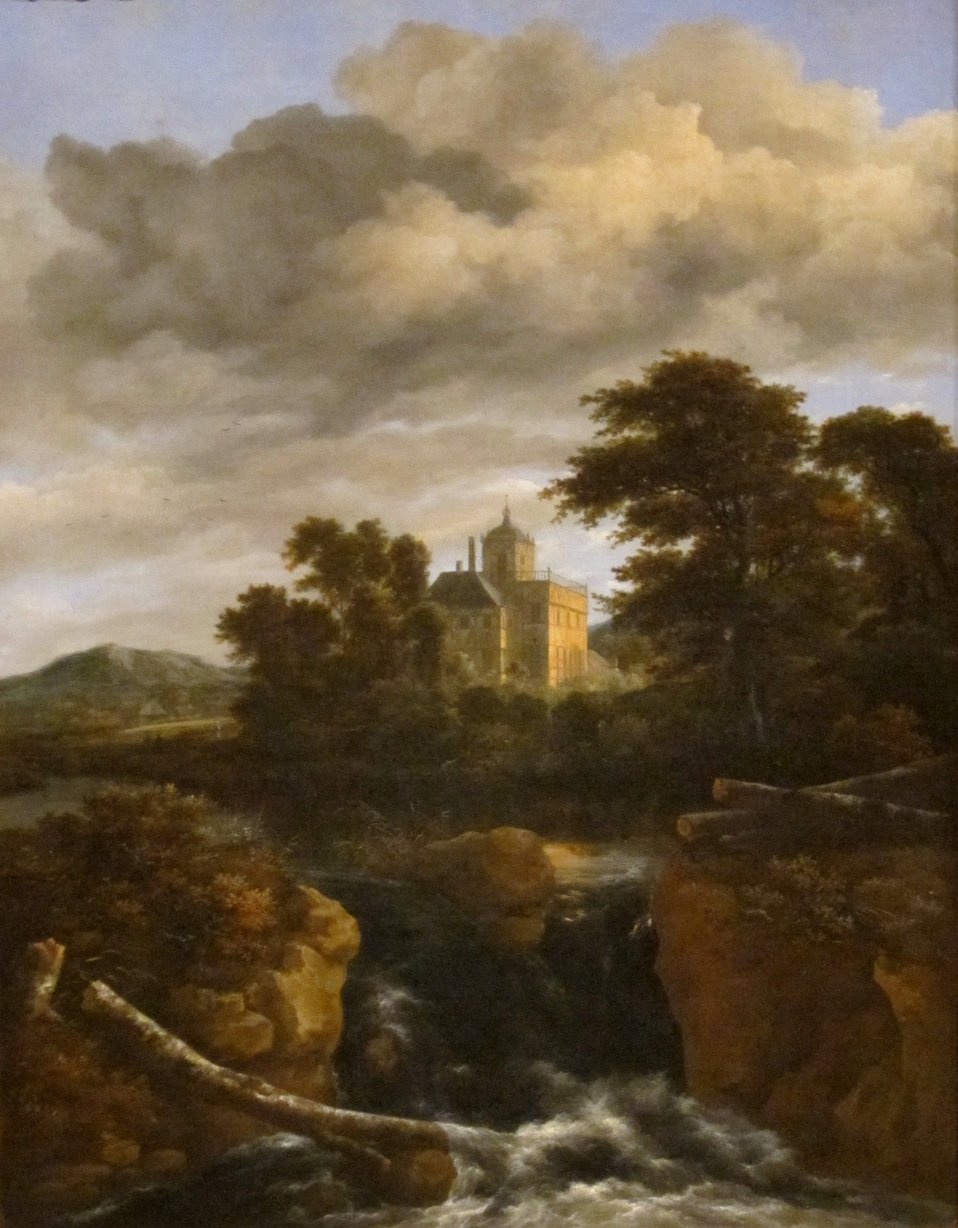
'Landscape with a Waterfall and Castle' by Jacob van Ruisdael, Dayton